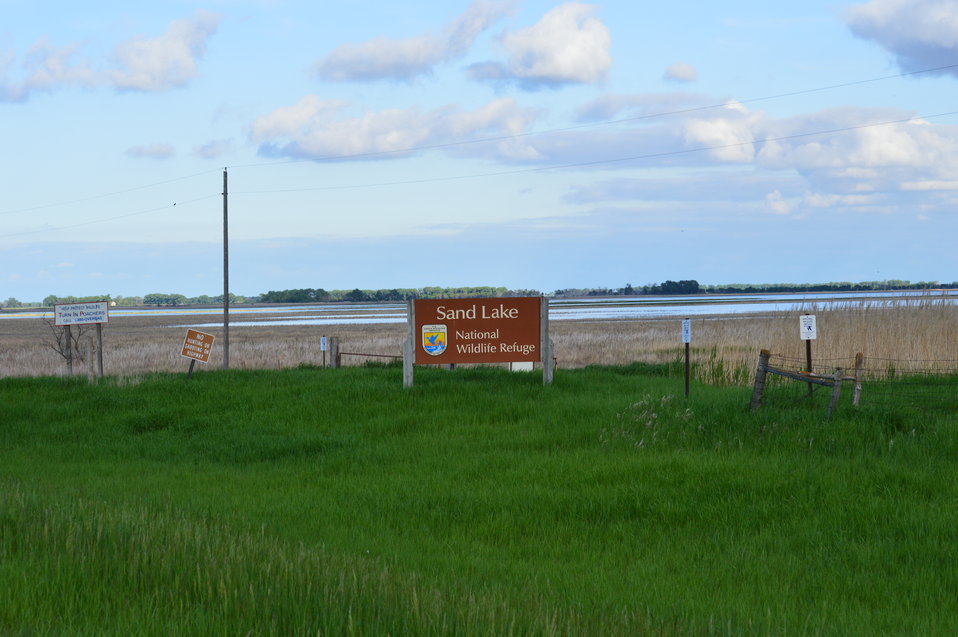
Sand Lake NWR sign

Scenery and wildlife at Sand Lake National Wildlife Refuge in South Dakota